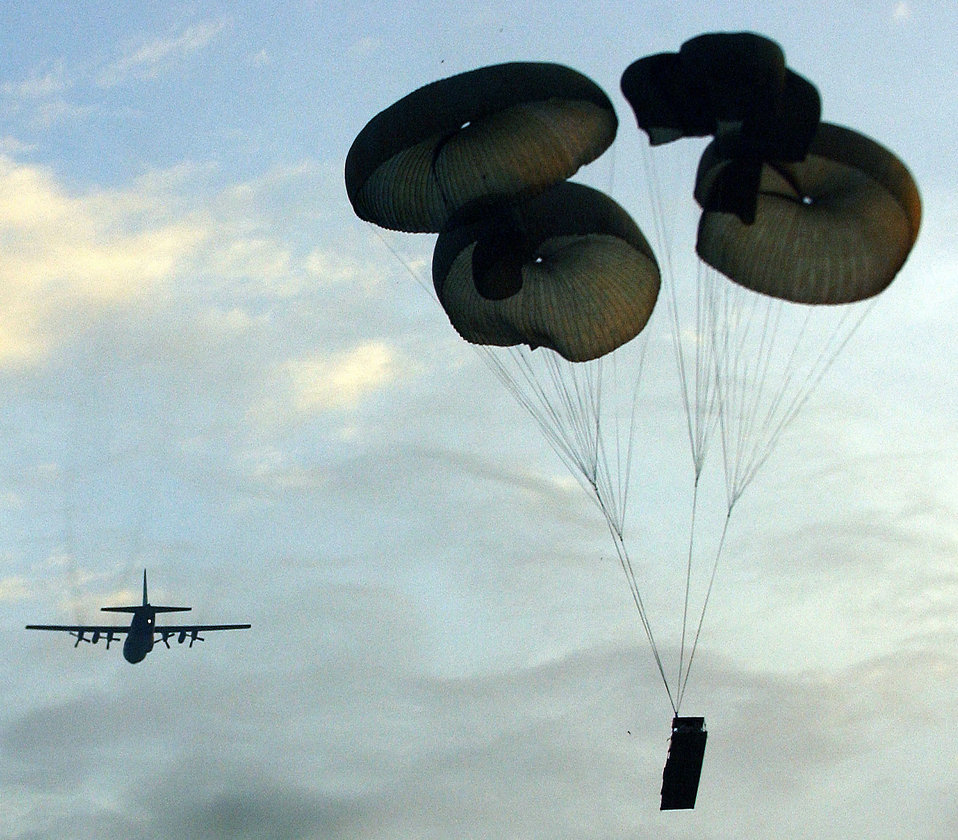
Delivering the package

FORT BRAGG, N.C. -- A U.S. Air Force C-130 Hercules drops a 105mm Howitzer at a drop zone here May 11. Large Package Week is a joint U.S. Army and U.S. Air Force airdrop exercise designed to enhance service cohesiveness.